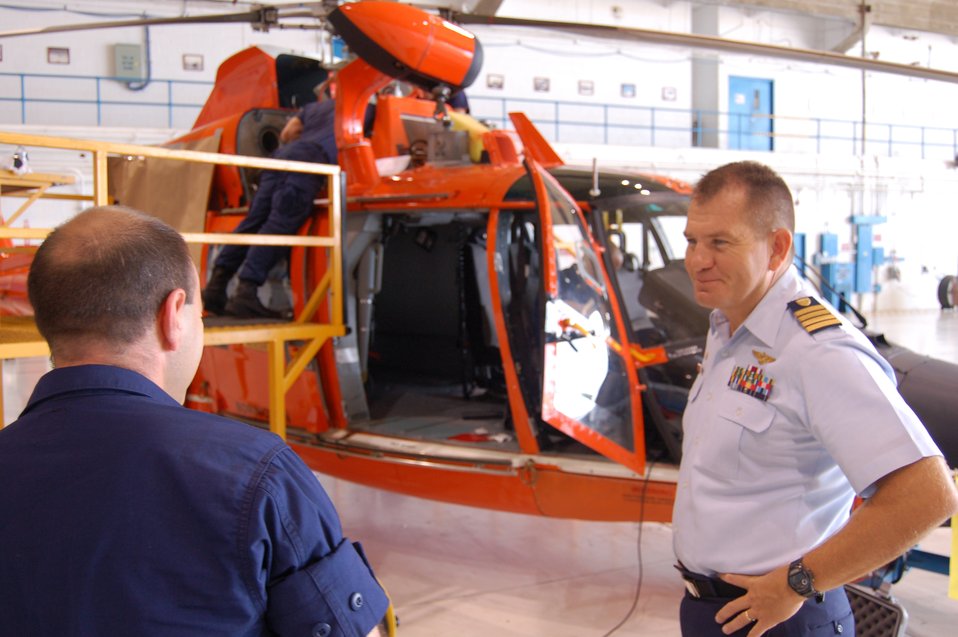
Blue uniforms continue command over Puerto Rico sky

Coast Guard Capt. Thomas Wade talks to a Coast Guard maintainer working on an HH-65C Dolphin helicopter March 20 at Coast Guard Air Station Borinquen, Puerto Rico. Captain Thomas is the commanding officer of the air station. The Coast Guard air station has four HH-65Cs and 100 Coast Guardsmen.